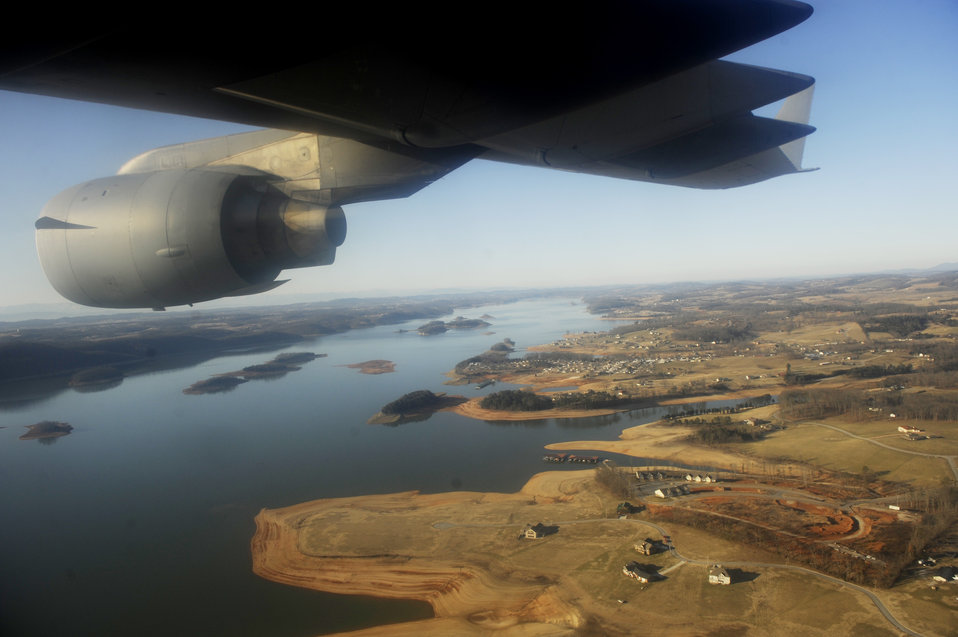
I can see for miles

An aircrew from the Air Force Reserve Command's 300th Airlift Squadron flies a training mission aboard a C-17 Globemaster III March 5, 2010, over an area near Chattanooga, Tenn. The aircrew is located at Charleston Air Force Base, S.C.